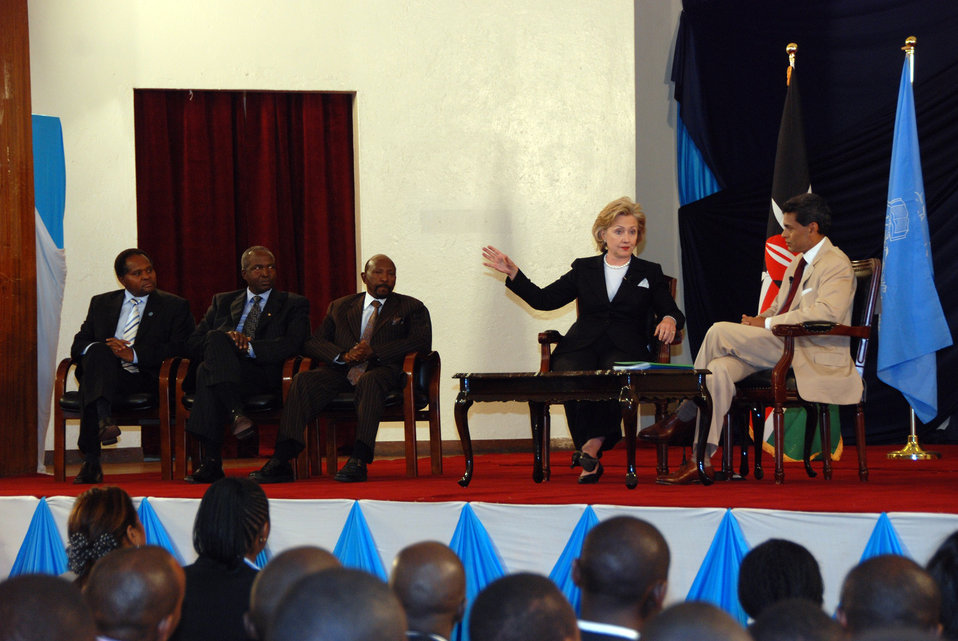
Secretary Clinton Participates in Town Hall Meeting

U.S. Secretary of State Hillary Rodham Clinton participates in a town hall meeting at the University of Nairobi in Nairobi, Kenya August 6, 2009.